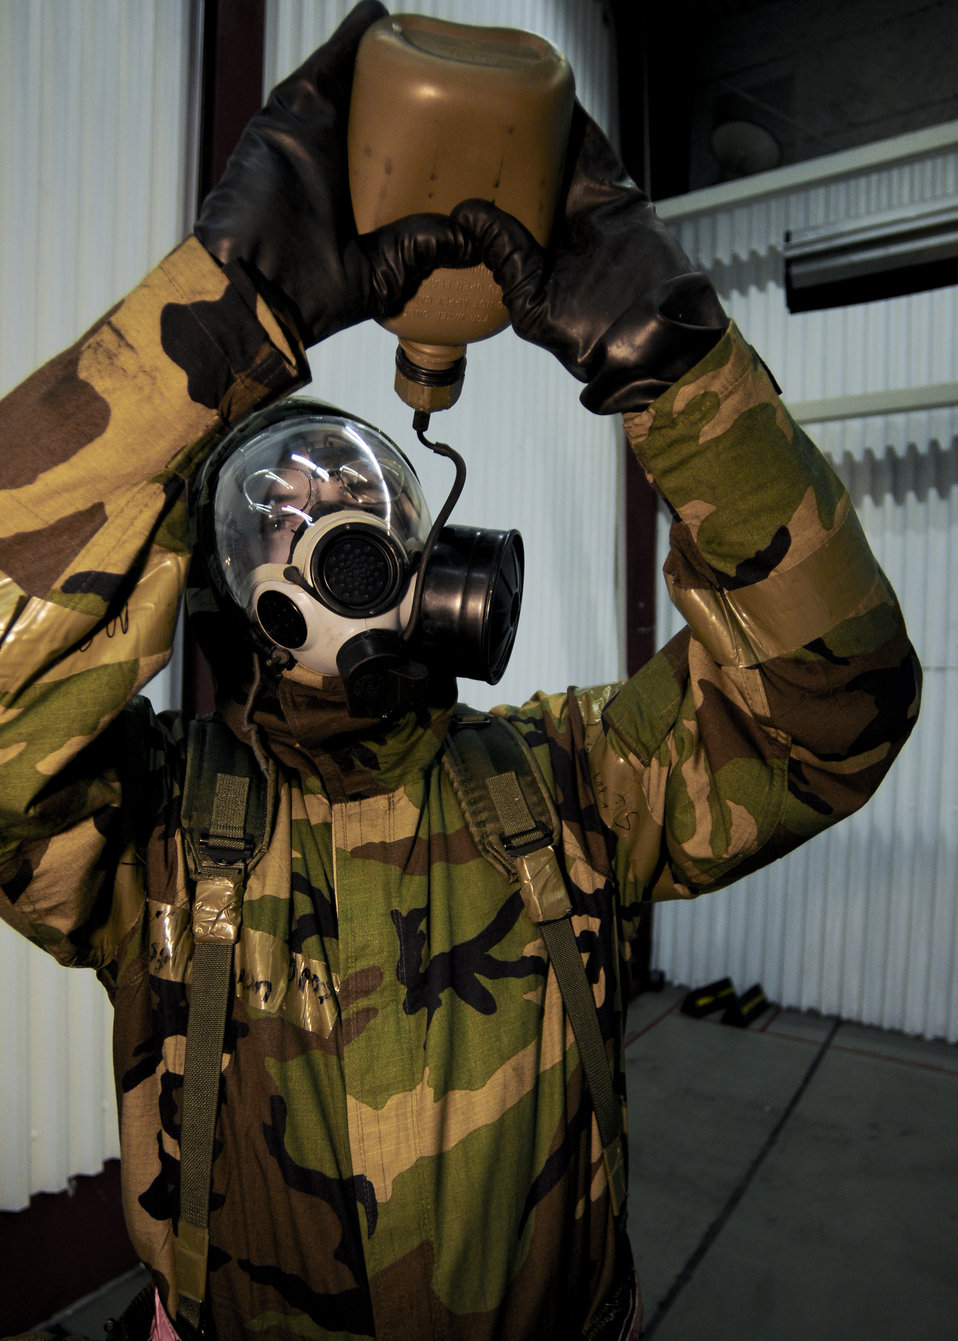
Refreshing!

Staff Sgt. Louis Dymon drinks from his canteen during simulated increased chemical threat conditions Aug. 6 at Spangdahlem Air Base, Germany. Some members of the 52nd Fighter Wing were required to work while wearing protective chemical gear during the wing's exercise from Aug. 4 to 7. Sergeant Dymon is assigned to the 52nd Equipment Maintenance Squadron.